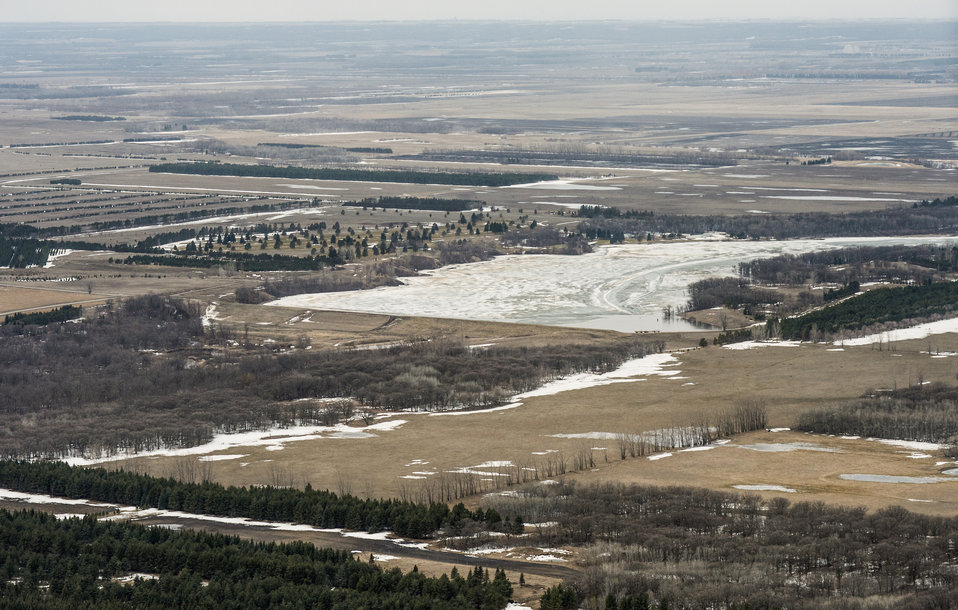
Renwick Dam, in Pembina County, ND, part of the Red River basin, on Wednesday, May 1, 2013. For information about this and other programs from the USDA Red River Basin Initiative (RRBI) please see www.mn.nrcs.usda.gov/news/features13/RRBI.html.